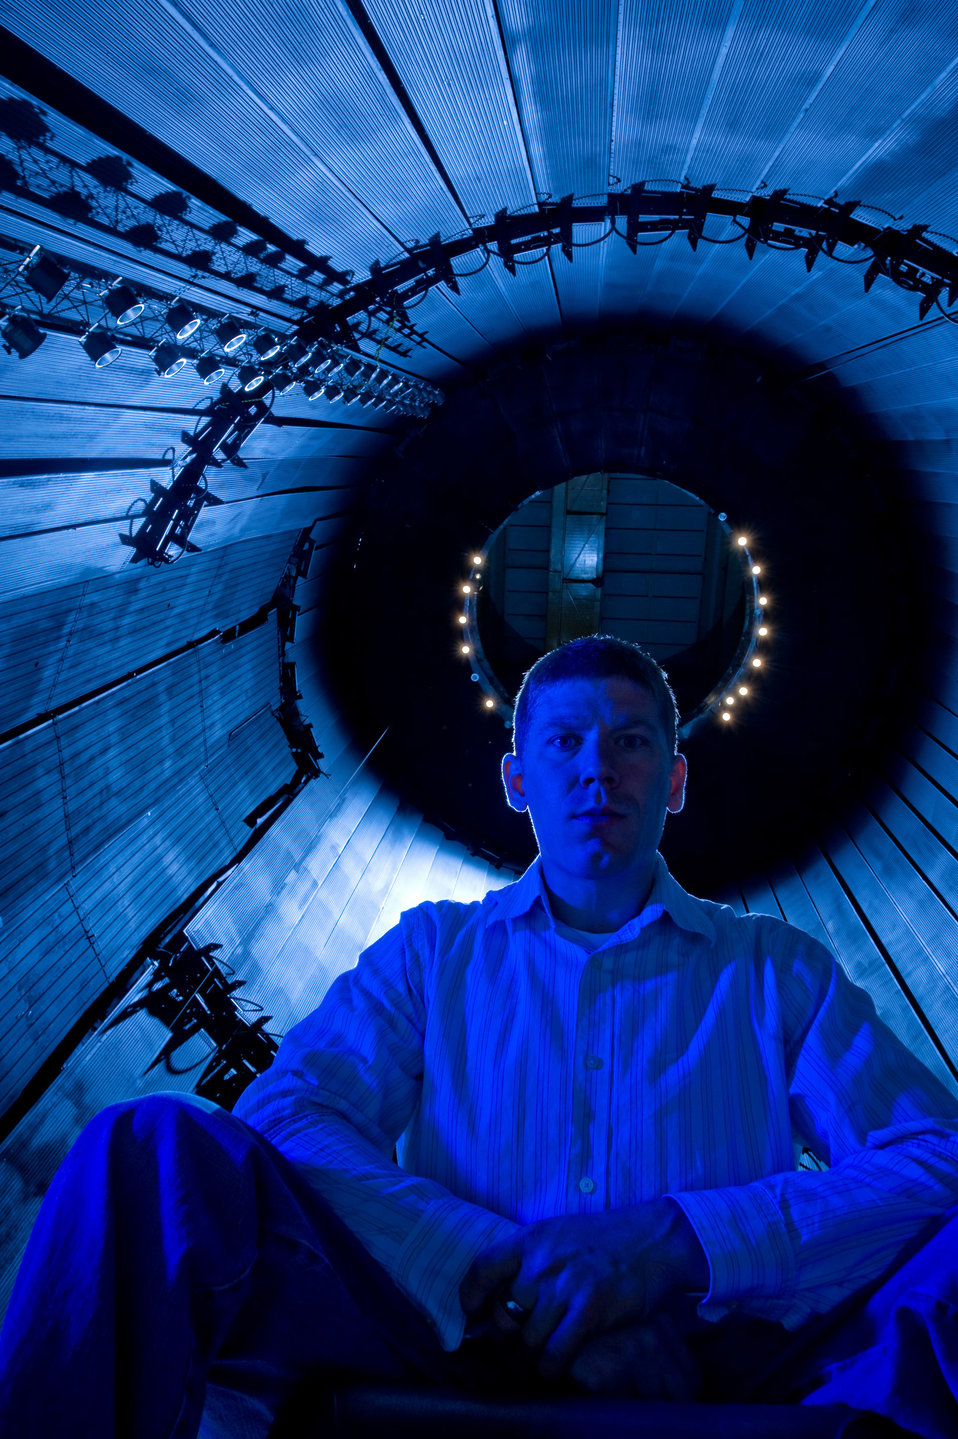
In the Space Chamber

Mike Lazalier, lead engineer, Aerospace Testing Alliance, on the test platform near the bottom of the Mark 1